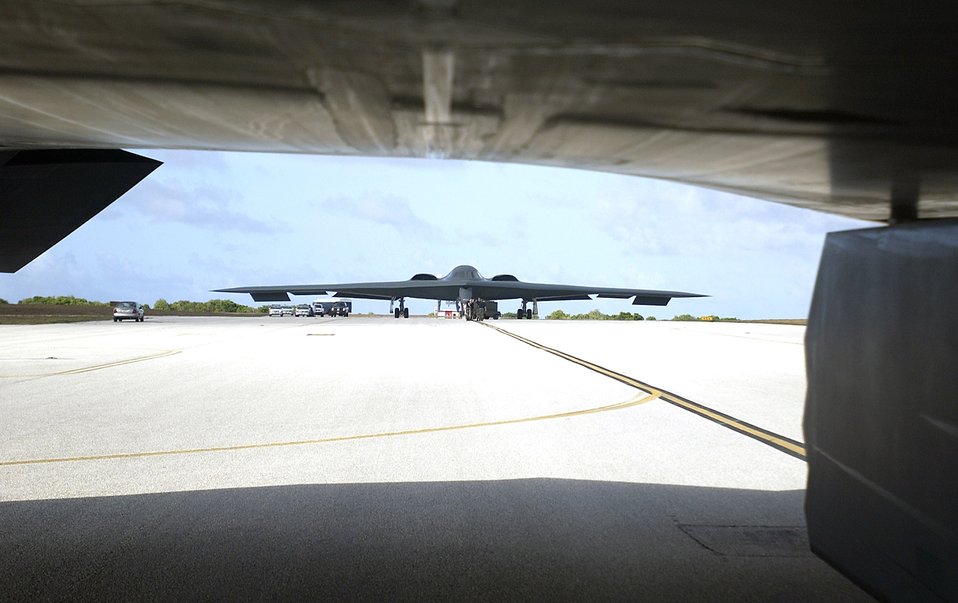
B-2s arrive at Andersen

A B-2 Spirit prepares to be towed into a parking spot at Andersen Air Force Base, Guam, on Saturday, April 29, 2006. B-2s are replacing the B-1B Lancers at Andersen as part of the continuous bomber rotation.